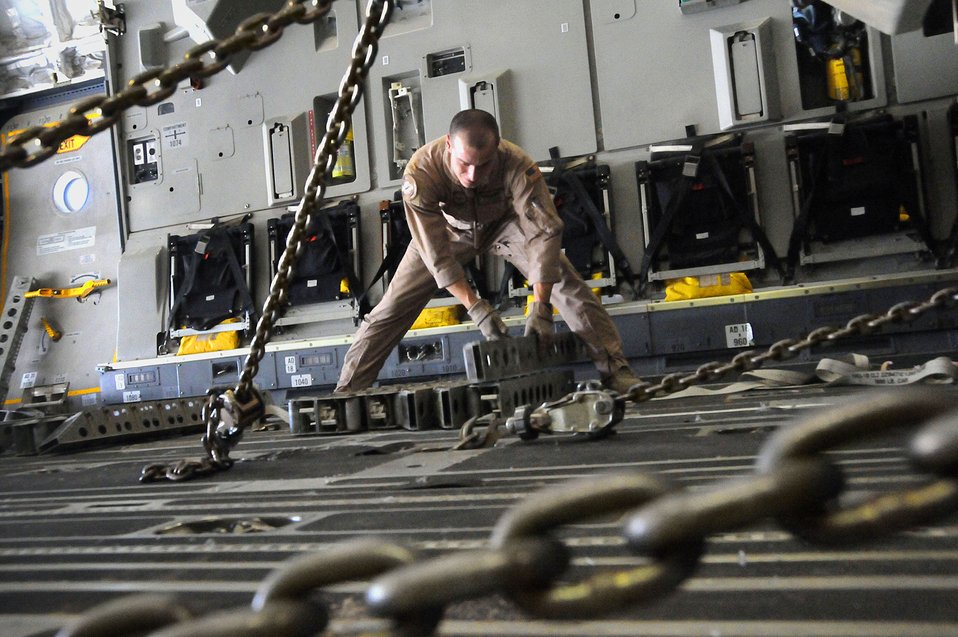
All secured

Staff Sgt. Jason Harmon secures a roller to the deck of a C-17 Globemaster III at Bagram Air Base, Afghanistan. Sergeant Harmon, an 816th Expeditionary Airlift Squadron loadmaster, ensures that supplies being airlifted are distributed evenly in the cargo hull.